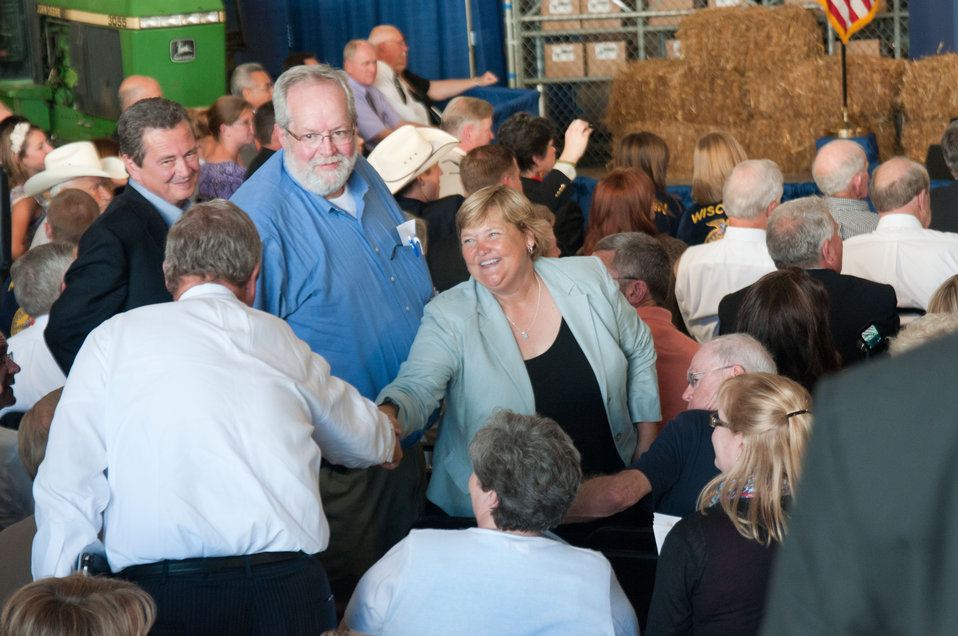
U.S. Department of Agriculture Secretary and chair of the White House Rural Council, Tom Vilsack, reaches out to meet the audience at the Northeast Iowa Community College, IA, prior to the White House Rural Economic Forum, on Tuesday, August 16, 2011.